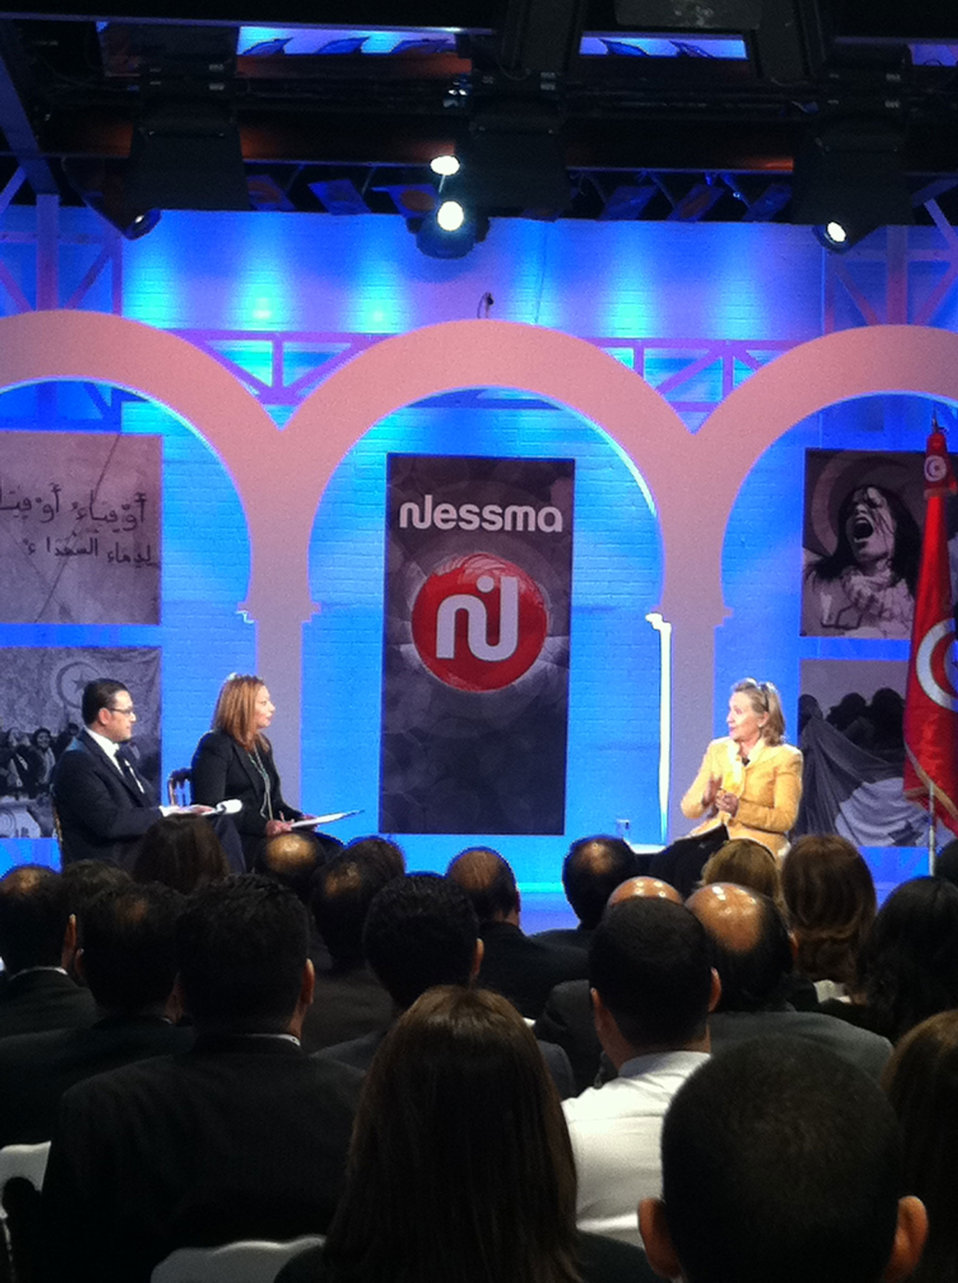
Secretary Clinton Participates in a Townterview

U.S. Secretary of State Hillary Rodham Clinton participates in a townterview with members of civil society at Nessma TV in Tunis, Tunisia, on March 17, 2011.